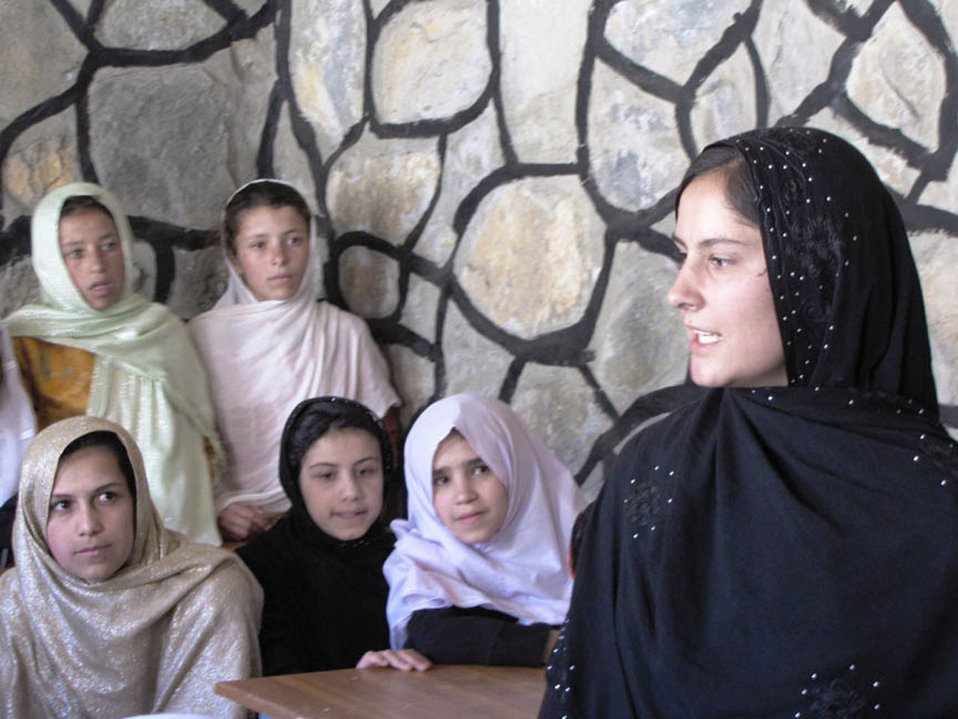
Girls' school opens in Panjshir

Lima, 16, a 12th grader at a Kabul high school, translates English into Dari for local Afghans as Navy Adm. Mike Mullen, chairman of the Joint Chiefs of Staff, speaks July 15 during the opening ceremony of the Peshgur School for Girls in the Khenj district of eastern Afghanistan's Panjshir province. During the ceremony, Lima also spoke with the students about her educational path. Fluent in Dari, Pashto, English and Urdu, she is currently preparing for her college entrance exams, and plans to study medicine at Kabul University.